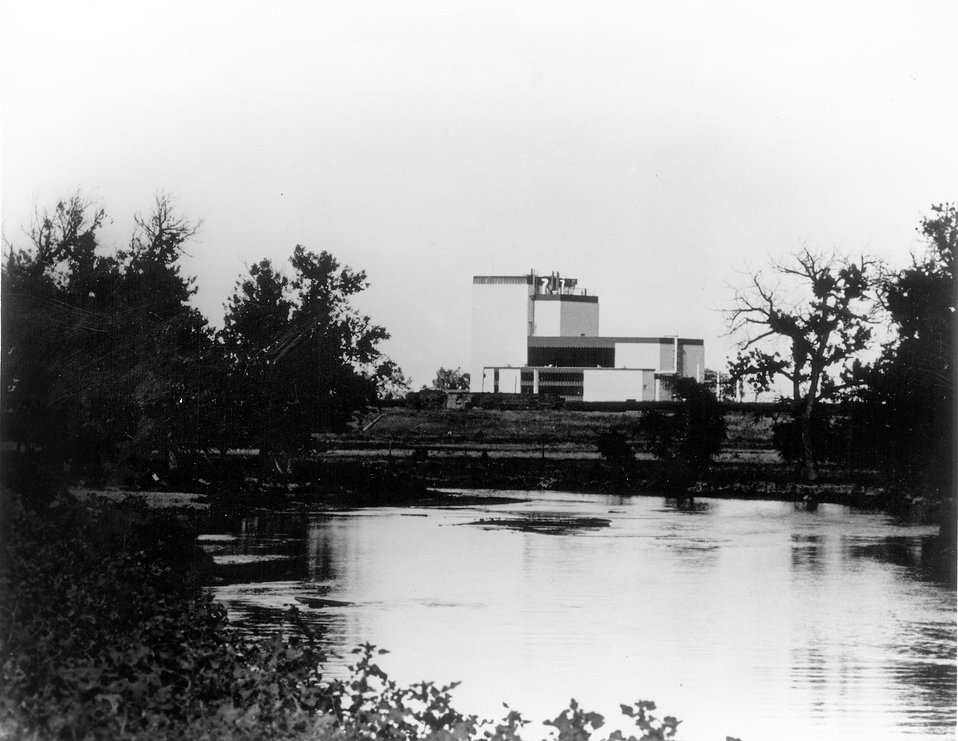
The Fort St. Vrain Nuclear Station...a 330 Mwe. high-temperature gas-cooled thermal reactor.